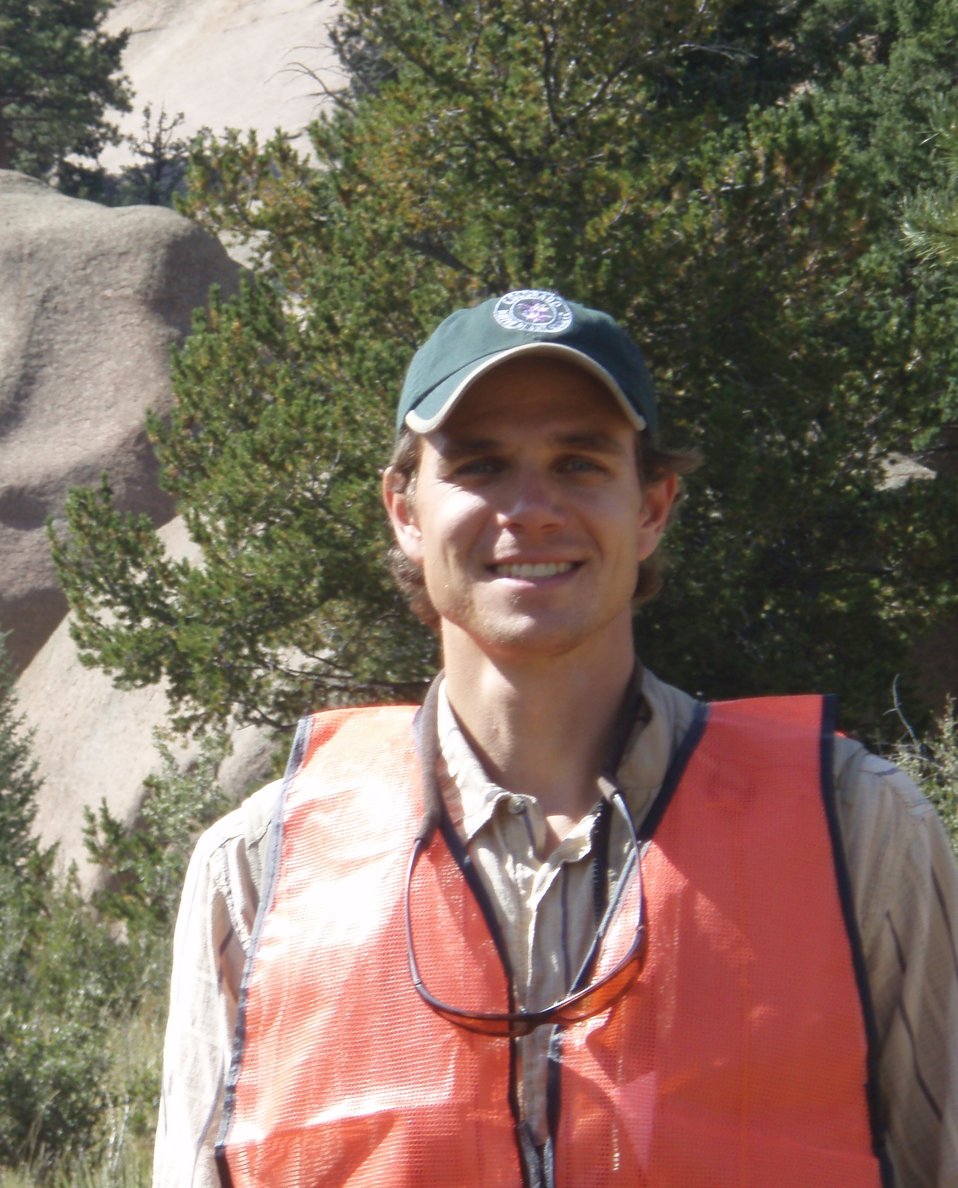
Partner-in-Mission Recovery Champion Brian Kurzel

Brian Kurzel of the Colorado Natural Areas Program received a 2011 Partners-in-MissionRecovery Champion award for conserving endangered and threatened Colorado plants as a member of the Colorado Rare Plants Conservation Initiative (RPCI) .

There are 15 threatened and endangered rare plant species in Colorado; the RPCI team plays a role in recovering all of these species. The RPCI worked to minimize threats to the species such as urban and rural development, oil and gas development, and recreational use among others. The team renewed an emphasis on rare plants, coordinated conservation efforts, maximized and leveraged funding for conservation and research efforts, enhanced and increased volunteer efforts for rare plant conservation, and increased awareness and education for these rare plants.

For more RPCI information please visit: conserveonline.org/workspaces/corareplantinitiative.

For information about the 2011 recovery champions, please visit the U.S. Fish and Wildlife Service’s Recovery Champion website at www.fws.gov/endangered/what-we-do/recovery-champions/inde....